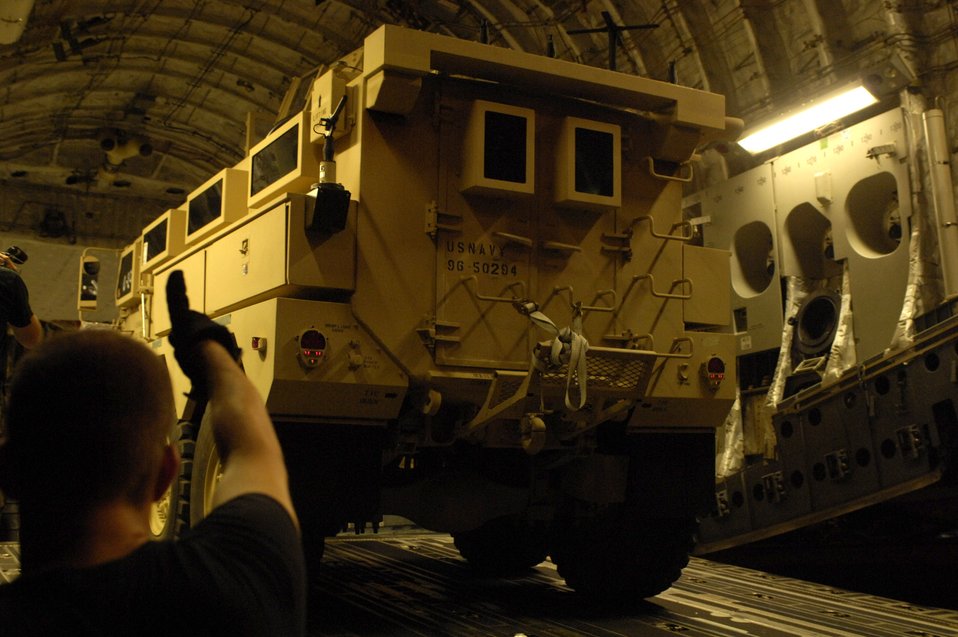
Destination: Iraq

Airmen from the 437th Aerial Port Squadron at Charleston AFB, S.C., load a Mine Resistant Ambush Protected armored vehicle on a C-17 Globemaster III for shipment to Iraq July 28. An estimated 3,500 MRAP vehicles are expected to be in Iraq by Dec. 31.